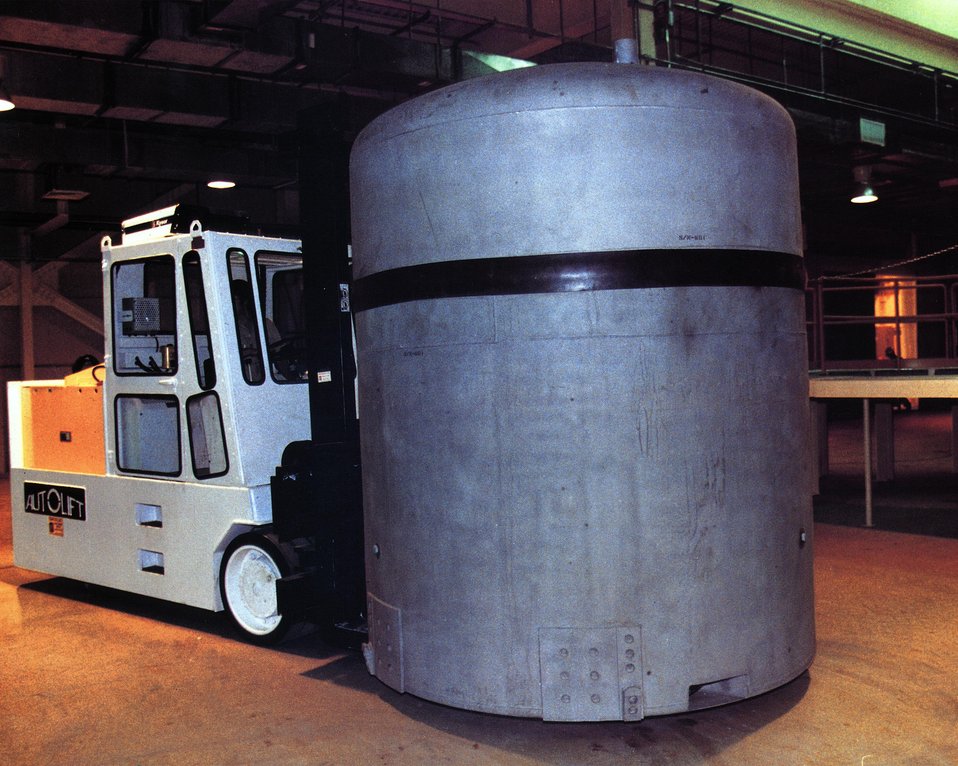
TRANSURANIC PACKAGE TRANSPORTER-II (TRUPACT-II) ON A FORKLIFT IN THE WASTE HANDLING BUILDING.

THE TRANSURANIC PACKAGE TRANSPORTER (TRUPACT) WAS DESIGNED TO TRANSPORT WASTE FROM THE GENERATOR SITES TO THE WASTE ISOLATION PILOT PLANT. WIPP, LOCATED SOUTHEAST OF CARLSBAD, NEW MEXICO, IS A DOE RESEARCH AND DEVELOPMENT FACILITY DESIGNED TO DEMONSTRATE THE SAFE DISPOSAL OF TRANSURANIC RADIOACTIVE WASTES.